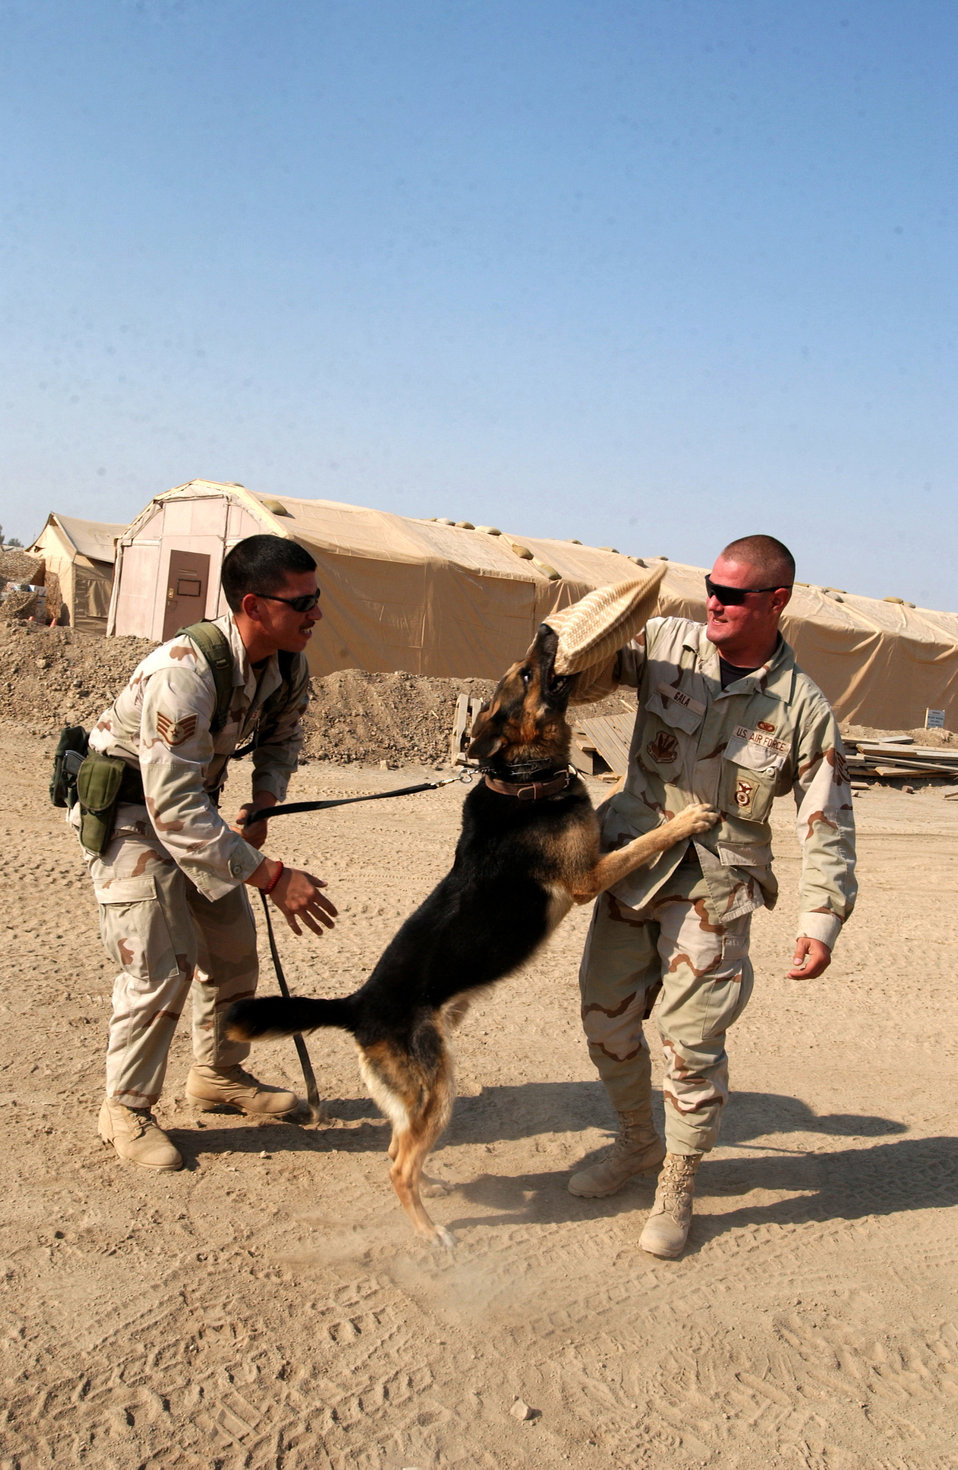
Bark Protection

TALLIL AIR BASE, Iraq -- Staff Sgts. James A. Allen (left) and Michael R. Gala, 332d Expeditionary Security Forces Squadron, conduct a handler protection exercise with a military working dog here Oct. 15. The training exercise teach the military working dog to present a level of force to protect Air Force assets against aggressive threats, in support of Operation Iraqi Freedom.